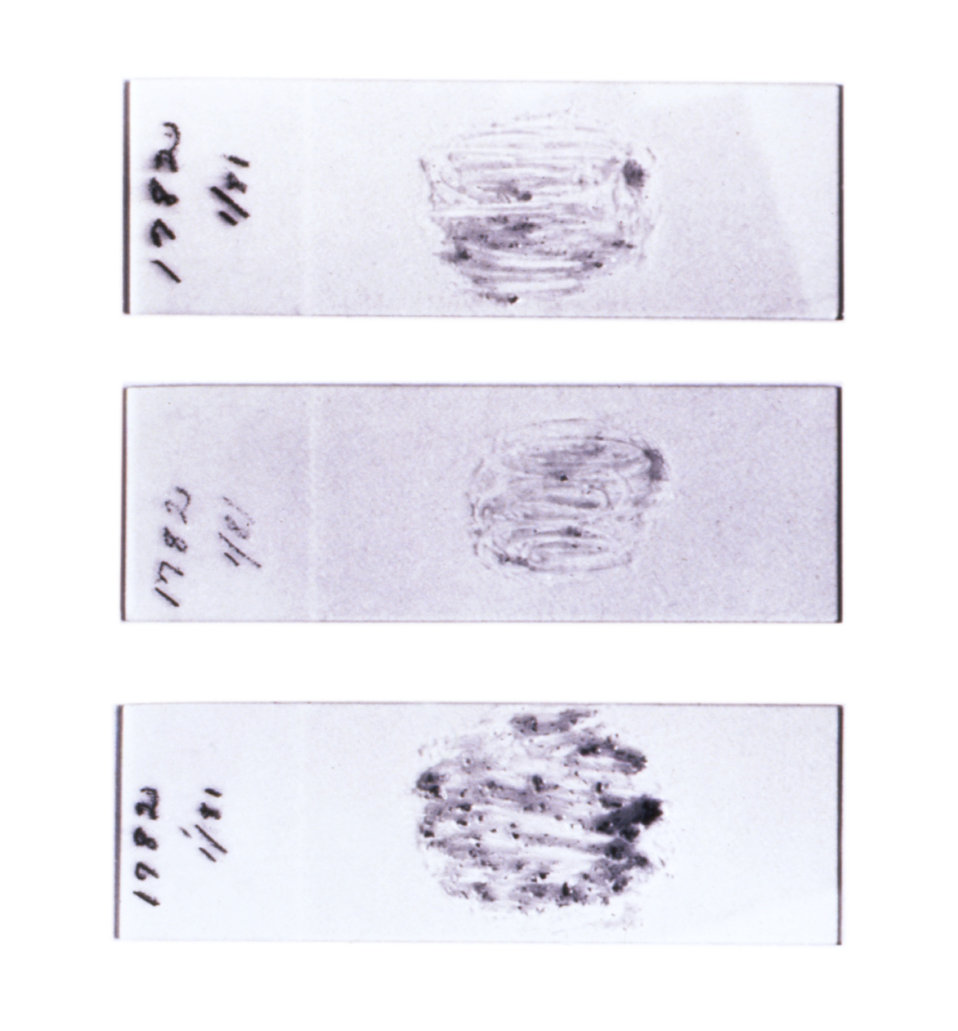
This photograph depicts the appearance of three un-preserved fecal smears ready for permanent staining.